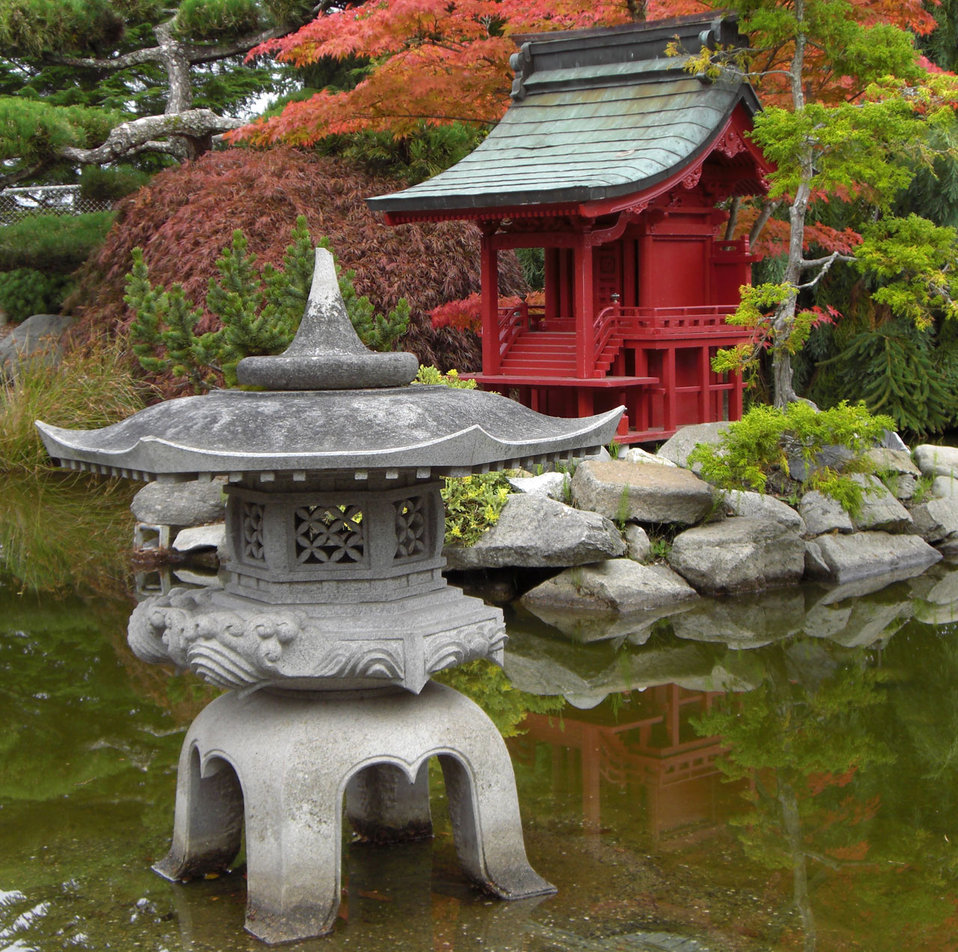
Pagoda

Miniature pagoda in point defiance, tacoma..